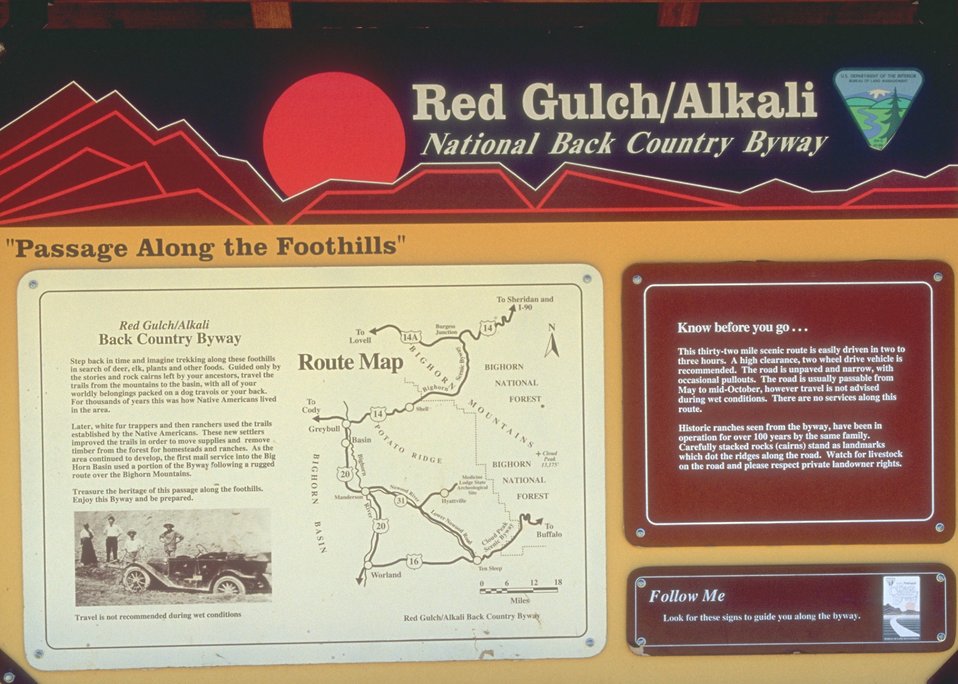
Red Gulch/Alkali Back Country Byway, Worland Field Office.